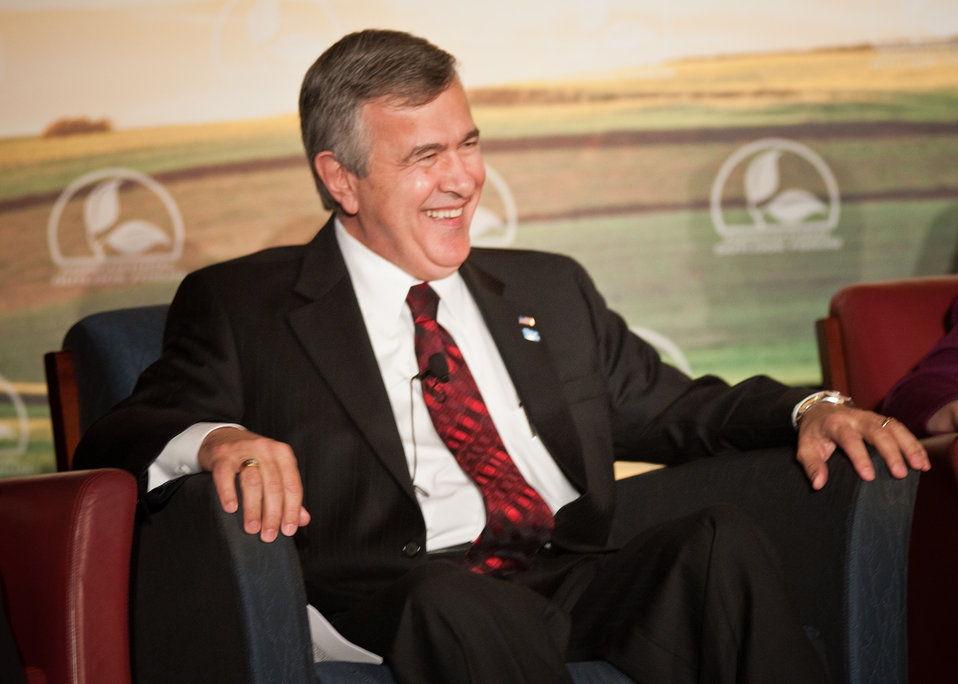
At the 2012 Agricultural Outlook Forum, “Moving Agriculture Forward” in Arlington, VA, held on Thursday, February 23, 2012, 7 former Secretaries of Agriculture sat on the plenary panel “Visions of the Future” hosted by current Agriculture Secretary Tom Vilsack. Senator Mike Johanns of Nebraska smiles during the panel discussions.